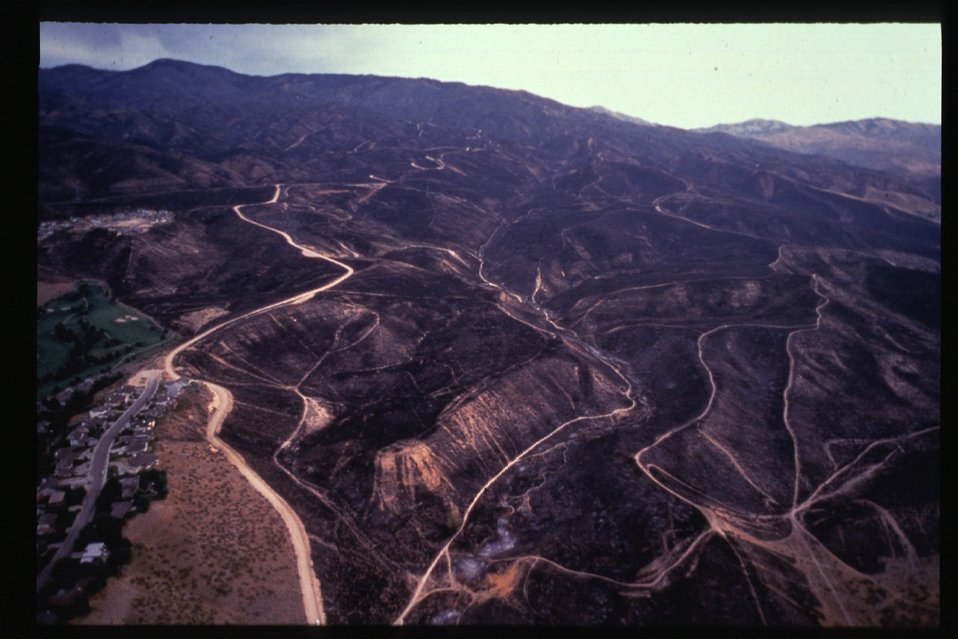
Fire 8th Street Fire Overview from gold course Four Rivers Field Office LSRD Lower Snake River District